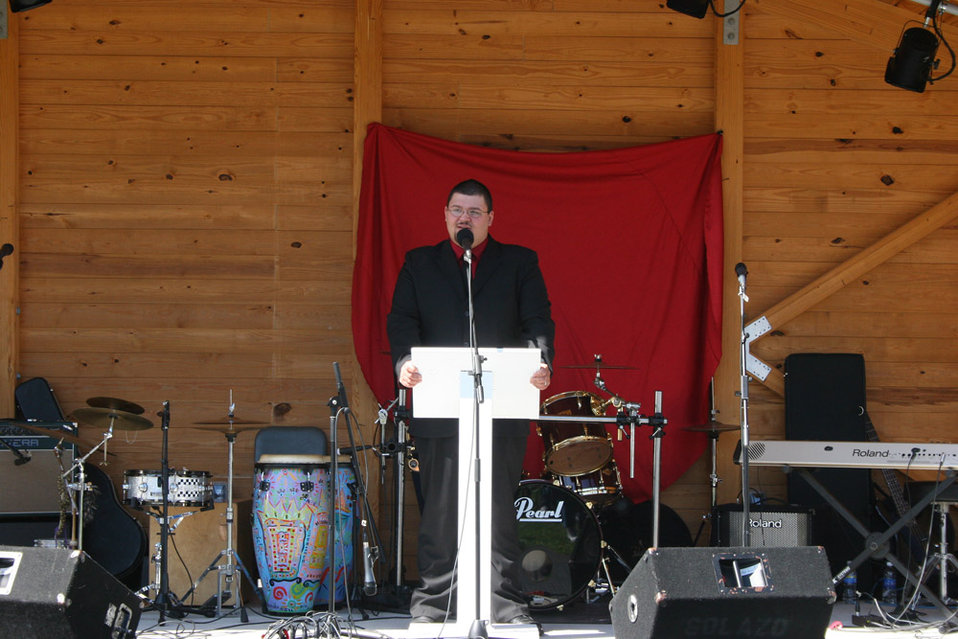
Freshwater Folk Festival

The 5th Annual Freshwater Folk Festival at White Sulphur Springs National Fish Hatchery in West Virginia.Credit: USFWS